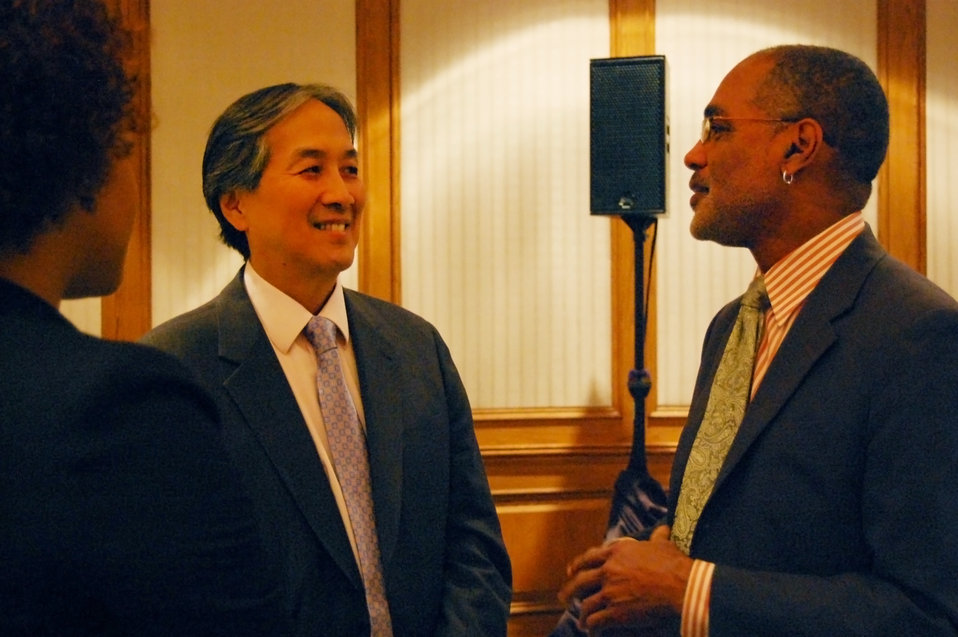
PACHA conf024